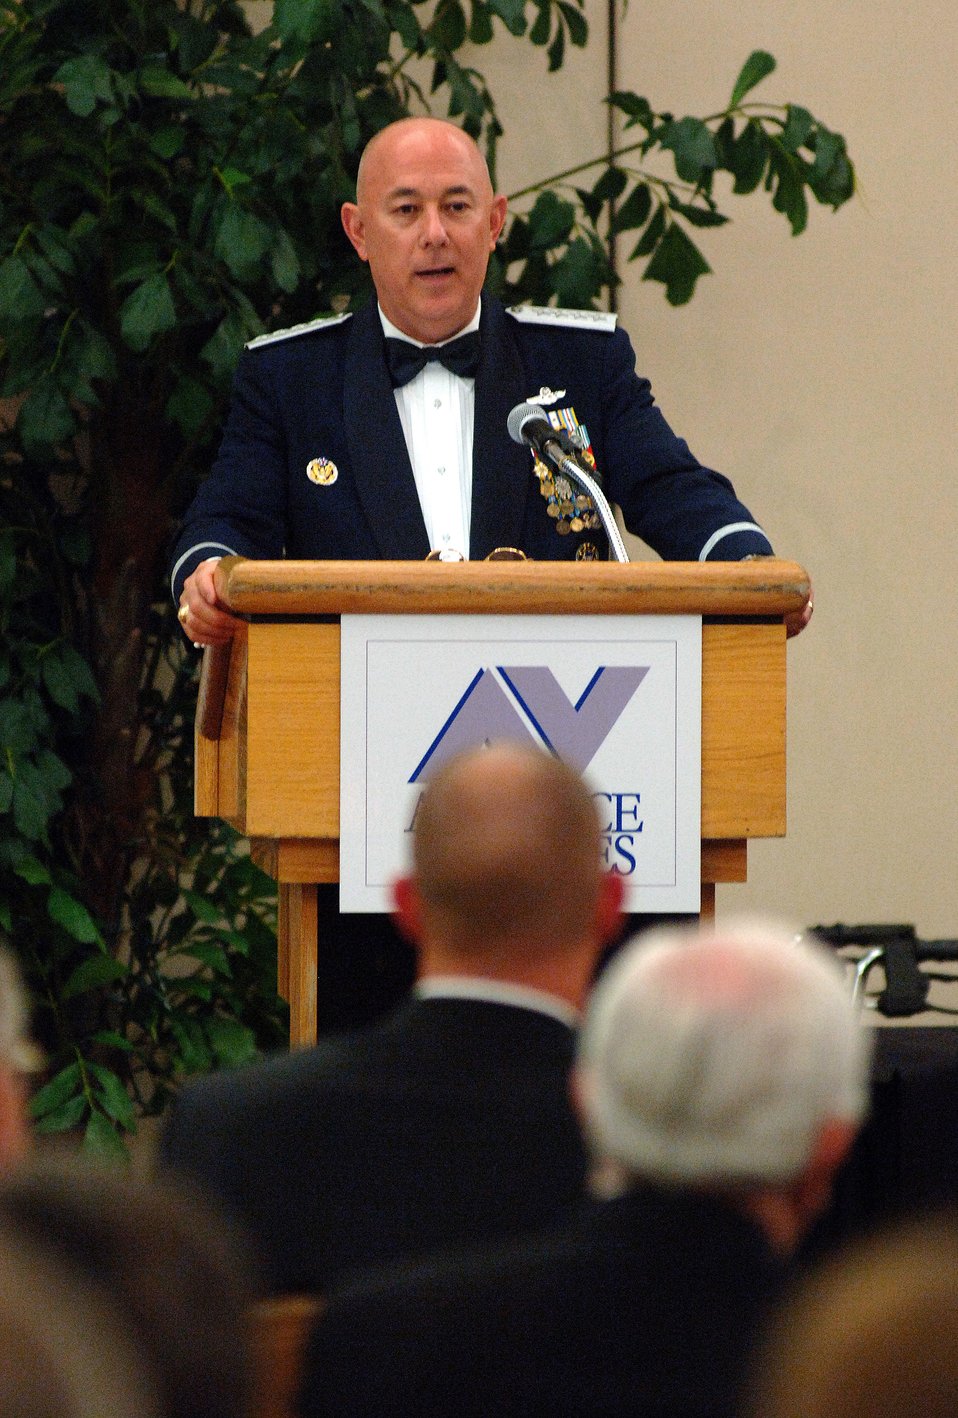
General tributes Air Force Villages

Air Force Chief of Staff, General T. Michael Moseley speaks at the Air Force Villages dinner Oct. 20, 2006 at Lackland Air Force Base, Texas. The Villages offer premier active living communities for retired and honorably seperated officers and their spouses, widows and widowers over the age of 62.